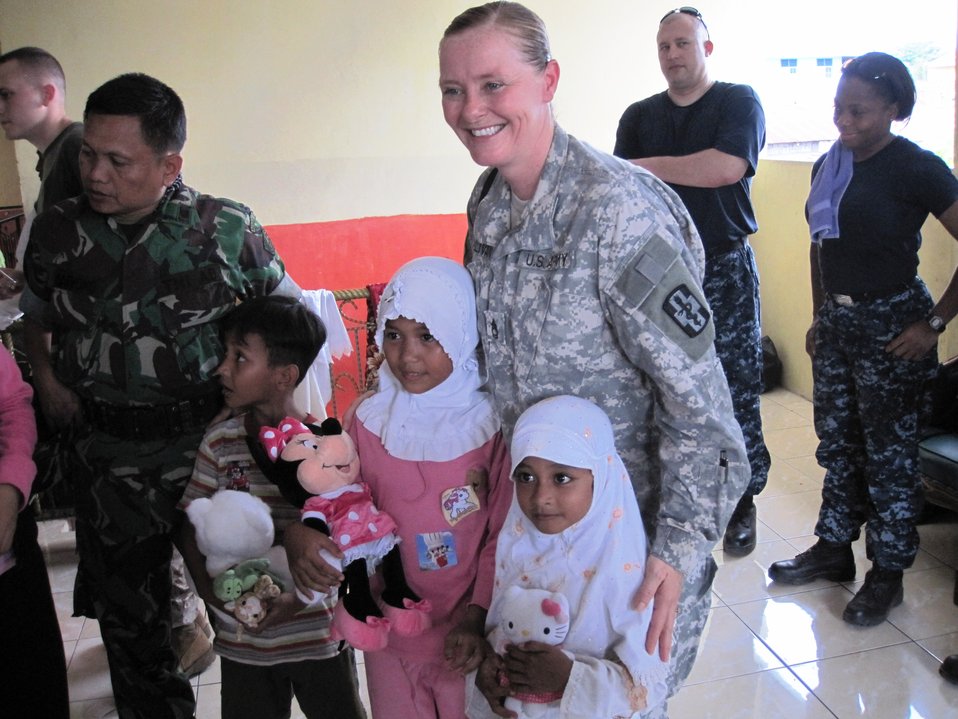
U.S. and Indonesian Personnel Interact With Indonesian Orphans

U.S. and Indonesian personnel from Pacific Partnership 2010 interact with Indonesian orphans during a visitation in Ternate, Indonesia, on July 18, 2010.